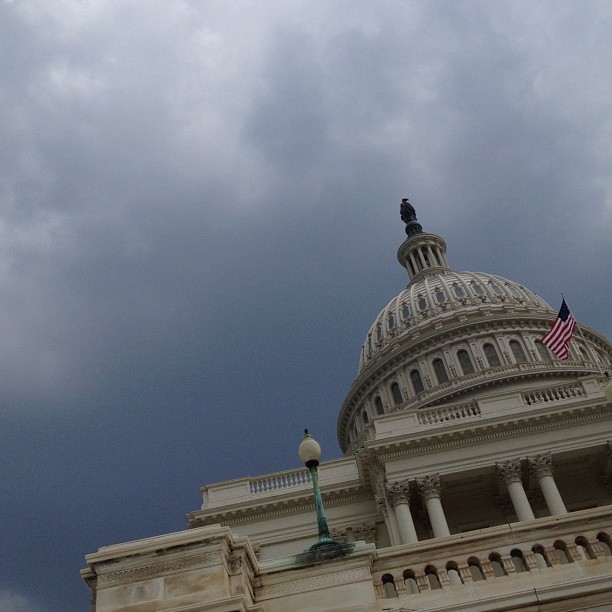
Storms headed toward Capitol